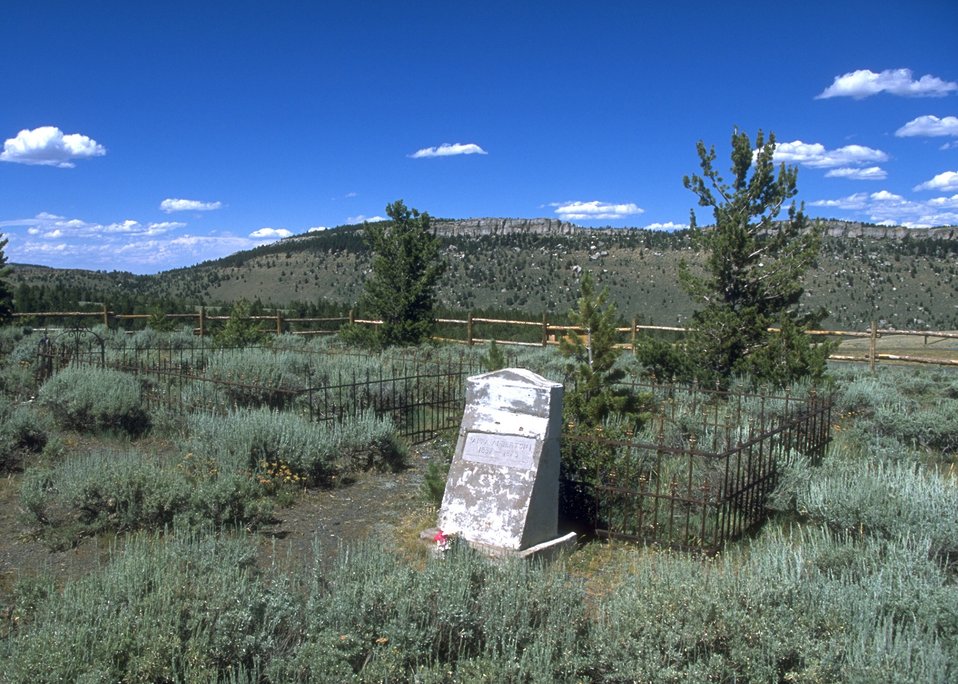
Grave yard near Miners Delight, Lander Field Office.